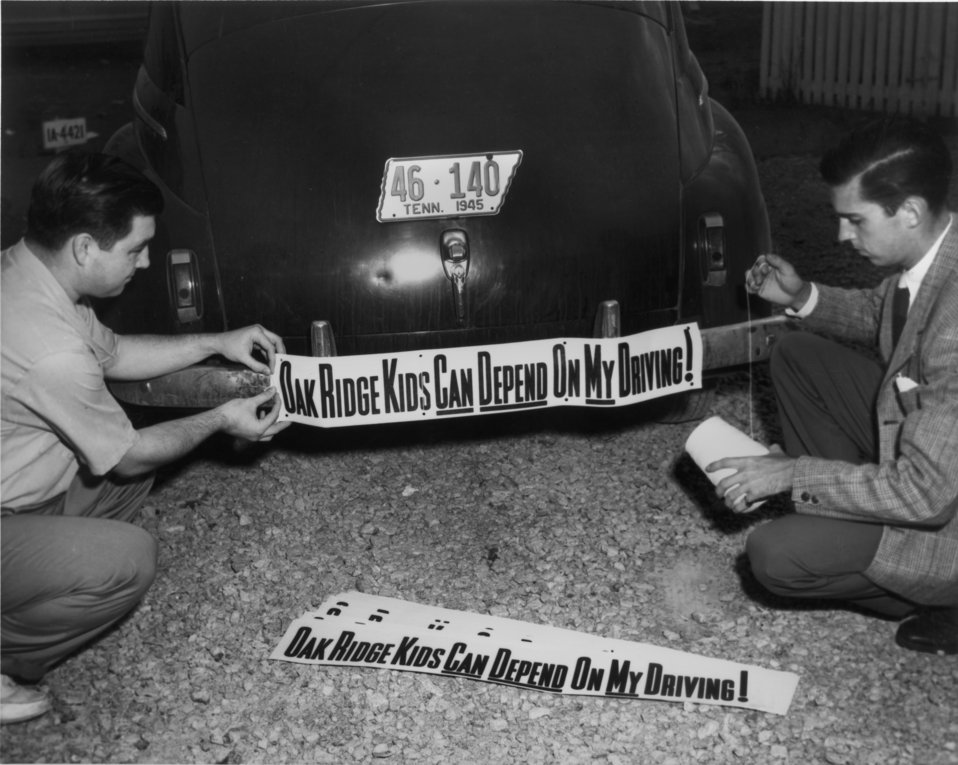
Jr. Chamber of Commerce Oak Ridge

Pro 731 DOE photo by Ed Westcott 6/15/45 Oak Ridge, Tennessee